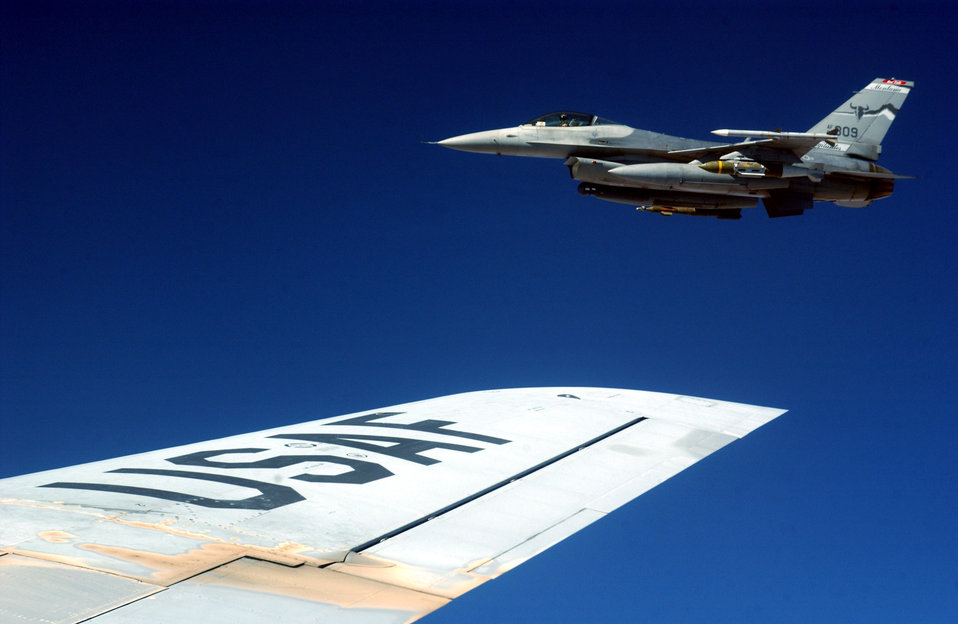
Gas 'n go

SOUTHWEST ASIA -- An F-16 Fighting Falcon flies near a KC-135 Stratotanker on Aug. 16 after refueling. The F-16 is from the 332nd Air Expeditionary Wing at Balad Air Base, Iraq, and the KC-135 is from the 92nd Air Refueling Wing at Fairchild Air Force Base, Wash.